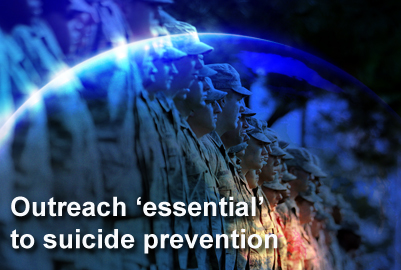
Suicide prevention